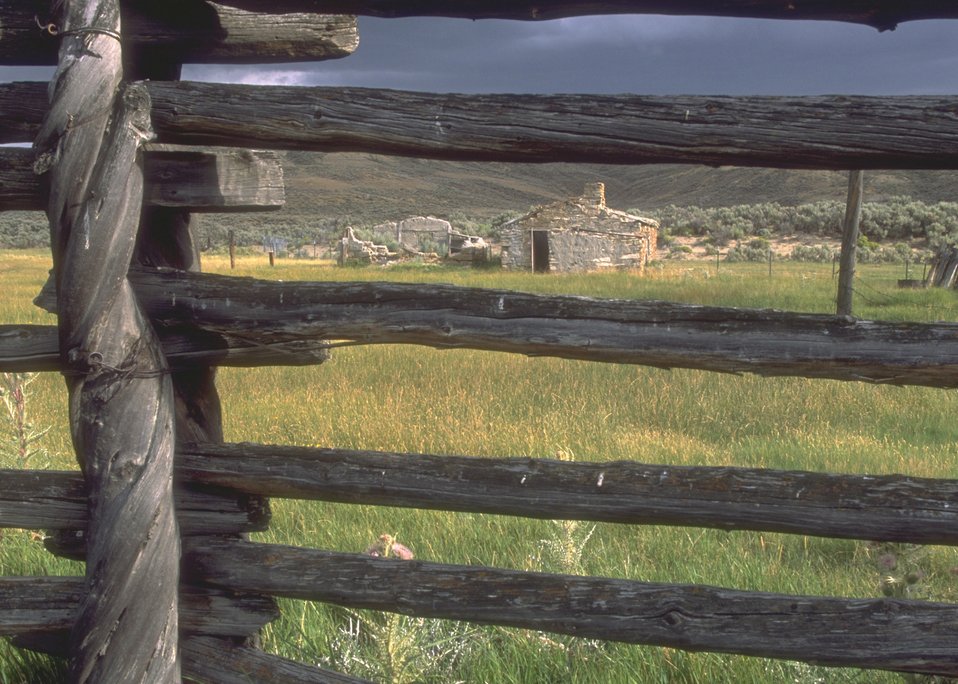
Historic Crookston Ranch near OHV Sand Dunes Area, Rock Springs Field Office.